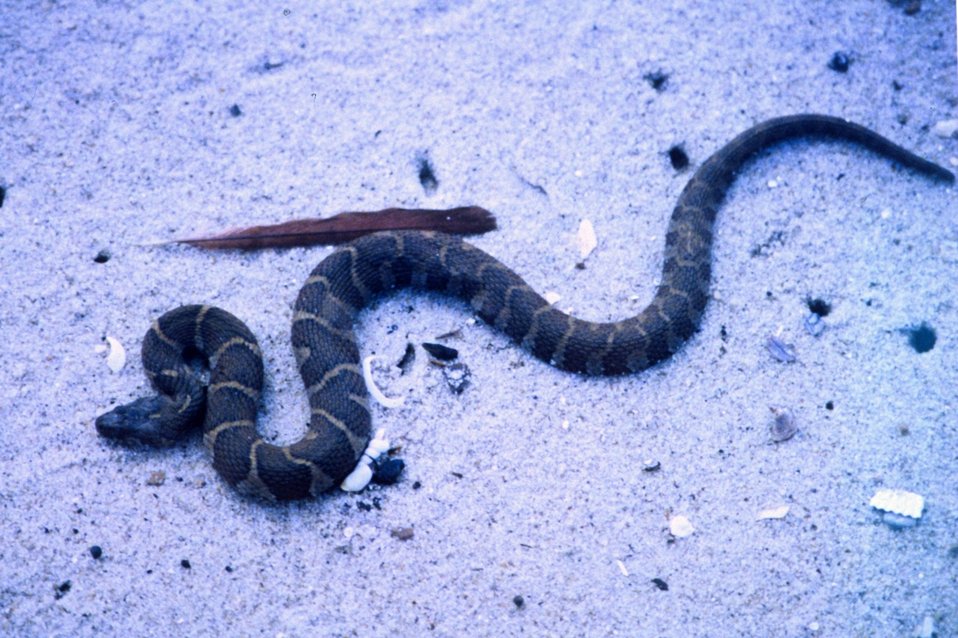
A young Northern Water Snake.